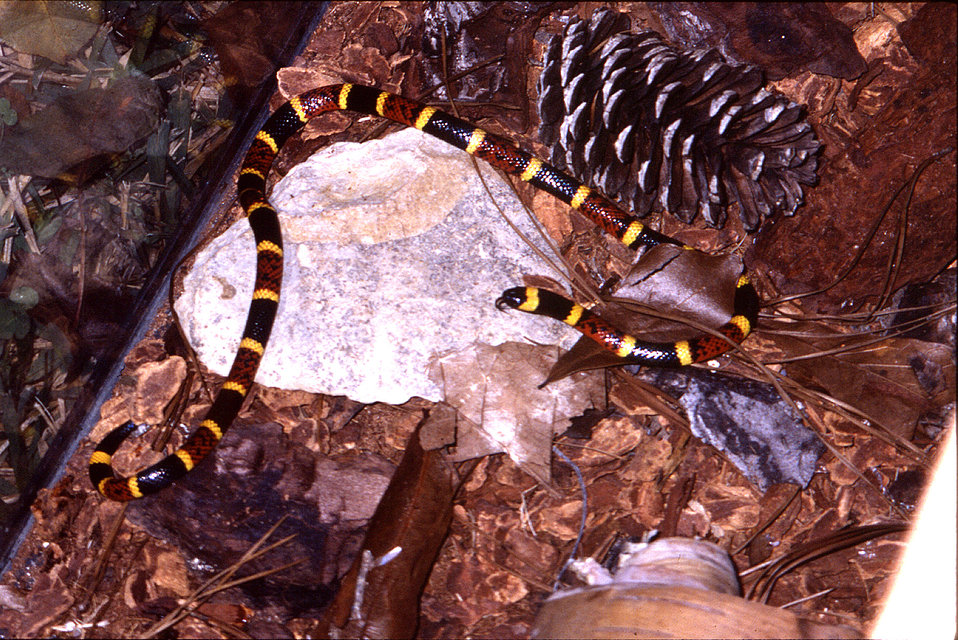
This was a 'Texas coral' snake, Micrurus tener tener in Galveston County, Texas. The 'eastern coral' snake, Micrurus fulvius fulvius, is very similar in appearance, and differs primarily in the distribution of black mottling within the red segments. To the uninitiated, the harmless 'milk snake', Lampropeltis triangulum annulata, (see PHIL# 8142), is often mistaken for this highly venomous counterpart. In contrast to the vipers, the fangs of the coral snakes and other elapids are short hollow structures that are permanently fixed in position on the anterior maxillary bones, i.e., proteroglyphous dentation (Porter, 1972). Because of their small size and short fangs, the North American coral snakes pose little risk to individuals wearing appropriate clothing and footwear. Most human envenomations occur on the hands after a coral snake was erroneously identified as a harmless king snake, and intentionally handled (Kitchens 1987).